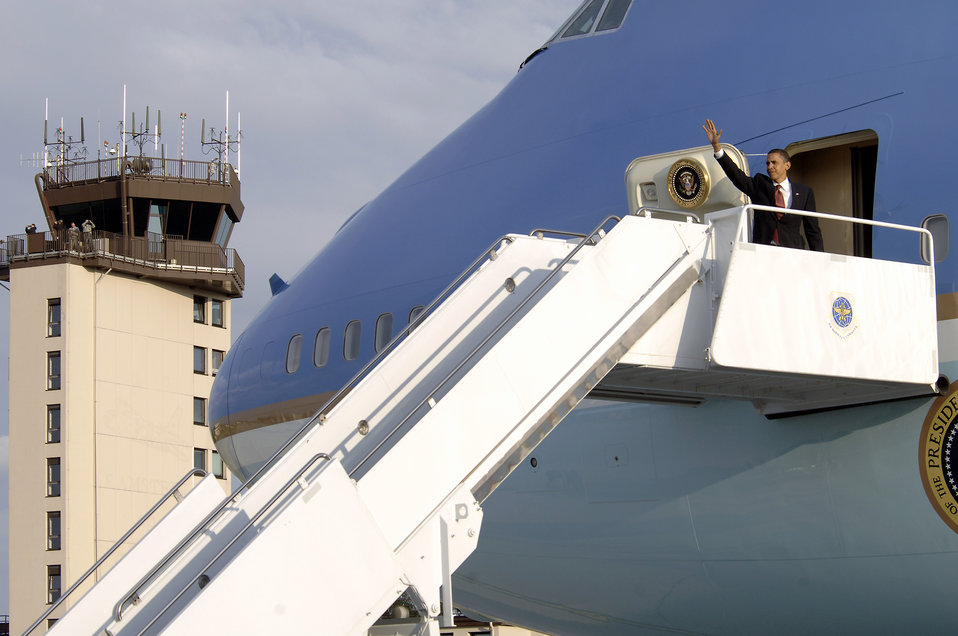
President makes stop at Ramstein Air Base

President Barack Obama waves to the crowd June 5 from Air Force One at Ramstein Air Base, Germany. He was visiting wounded U.S. servicemembers being treated at nearby Landstuhl Regional Medical Center, Germany.